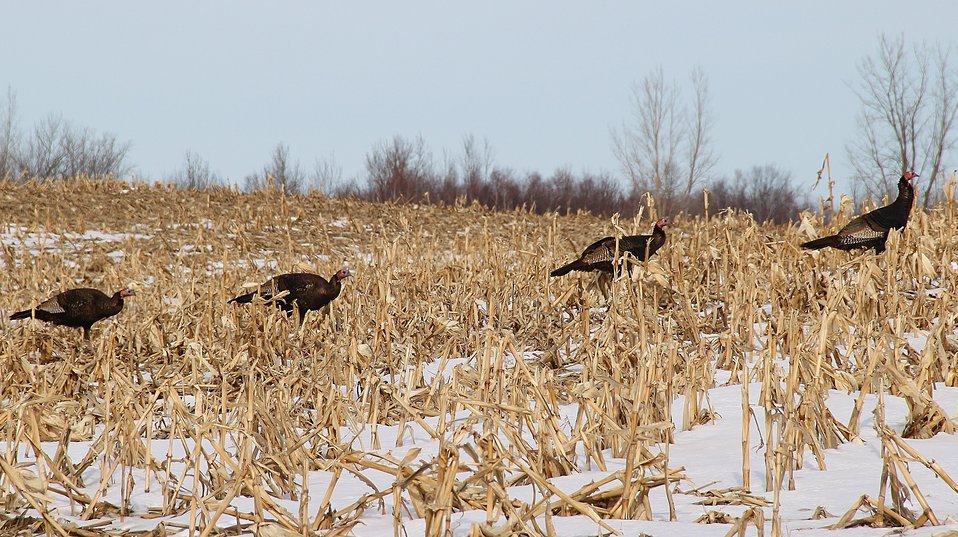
Turkeys looking for winter forage

Wild Turkeys in a private farm field adjacent to the Missisquoi NWR, Vermont